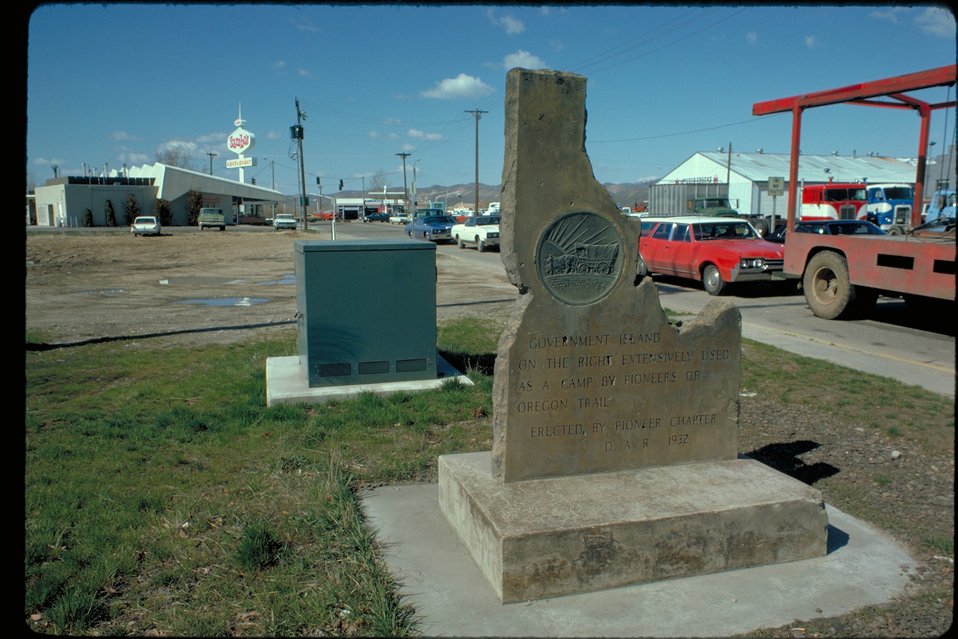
Boise Main St Government Island Monument Oregon Trail Lower Snake River District